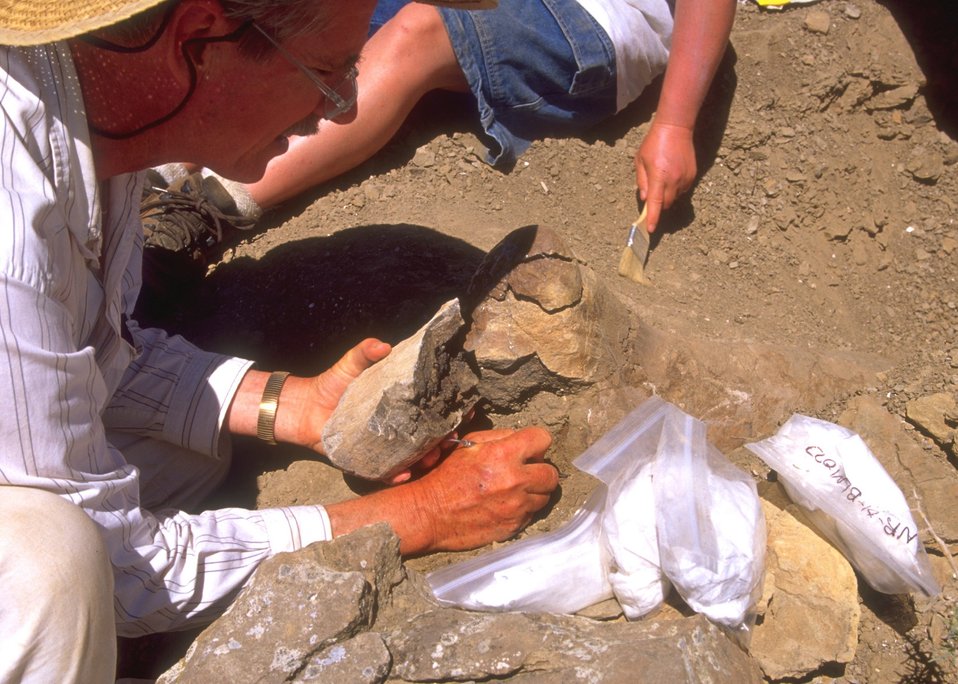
Paleontologist working a dig for dinosaur bones, Lance Creek Fossil Area, Newcastle Field Office.